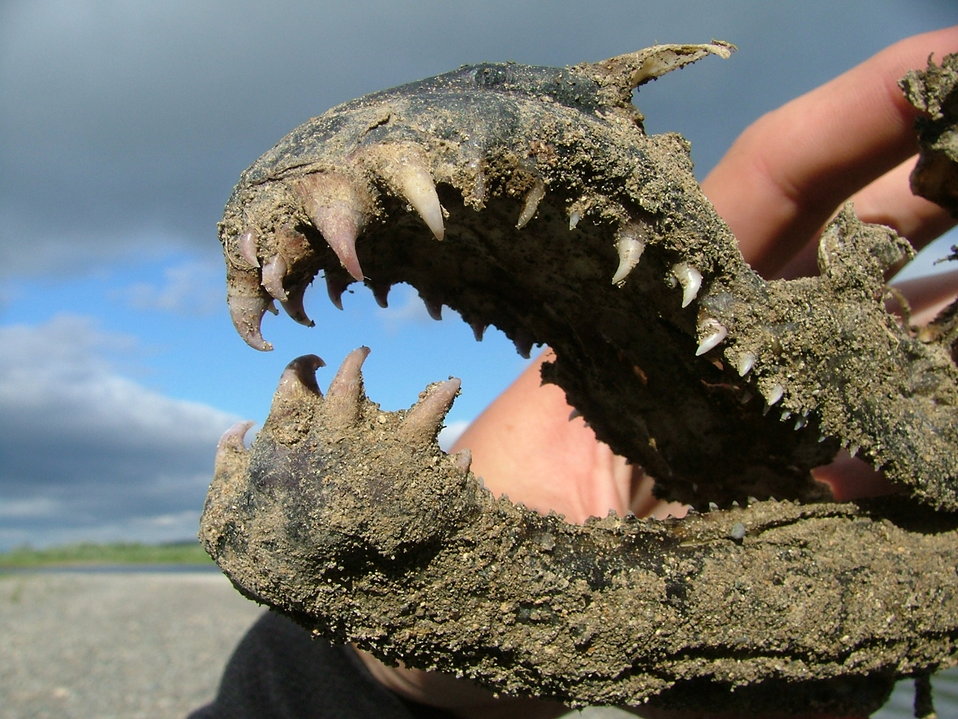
Chum salmon skull